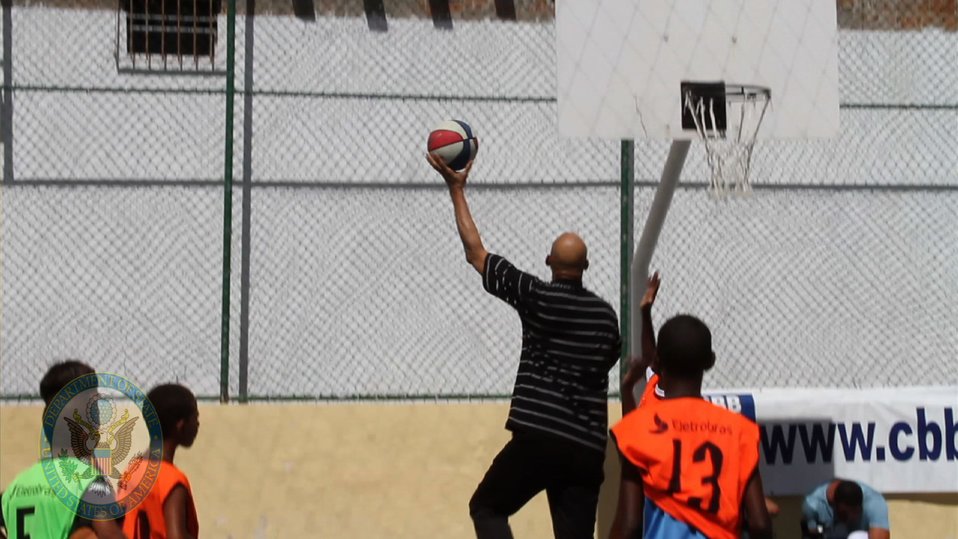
Cultural Ambassador Kareem Abdul-Jabbar Plays Basketball

Hall-of-Famer and Global Cultural Ambassador for the U.S. Department of State Kareem Abdul-Jabbar plays basketball with youth in Salvador, Brazil, on January 24, 2012.